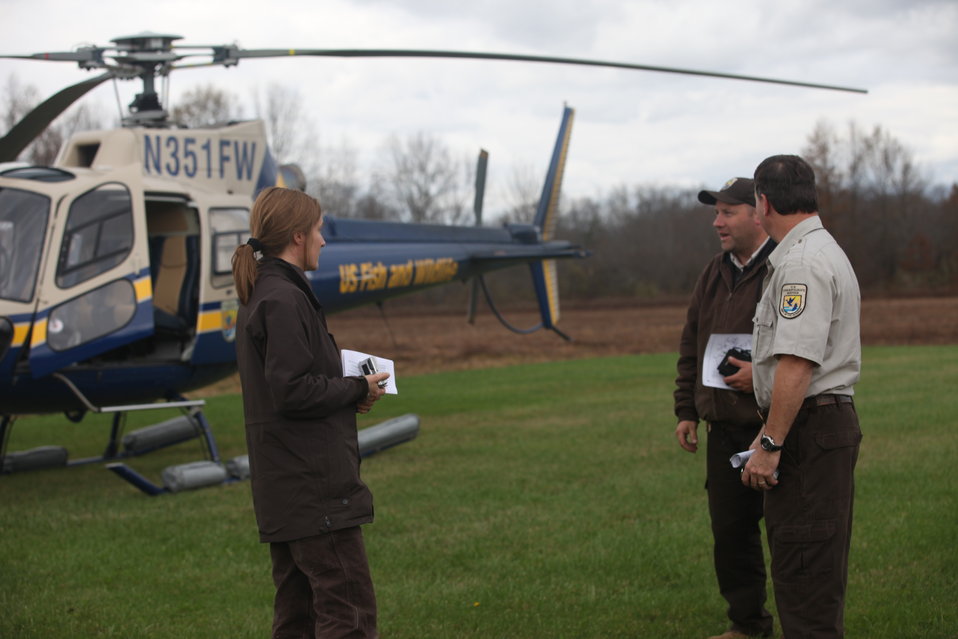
Great Swamp National Wildlife Refuge staff discuss what they saw during a helicopter flight over the refuge surveying storm damage.